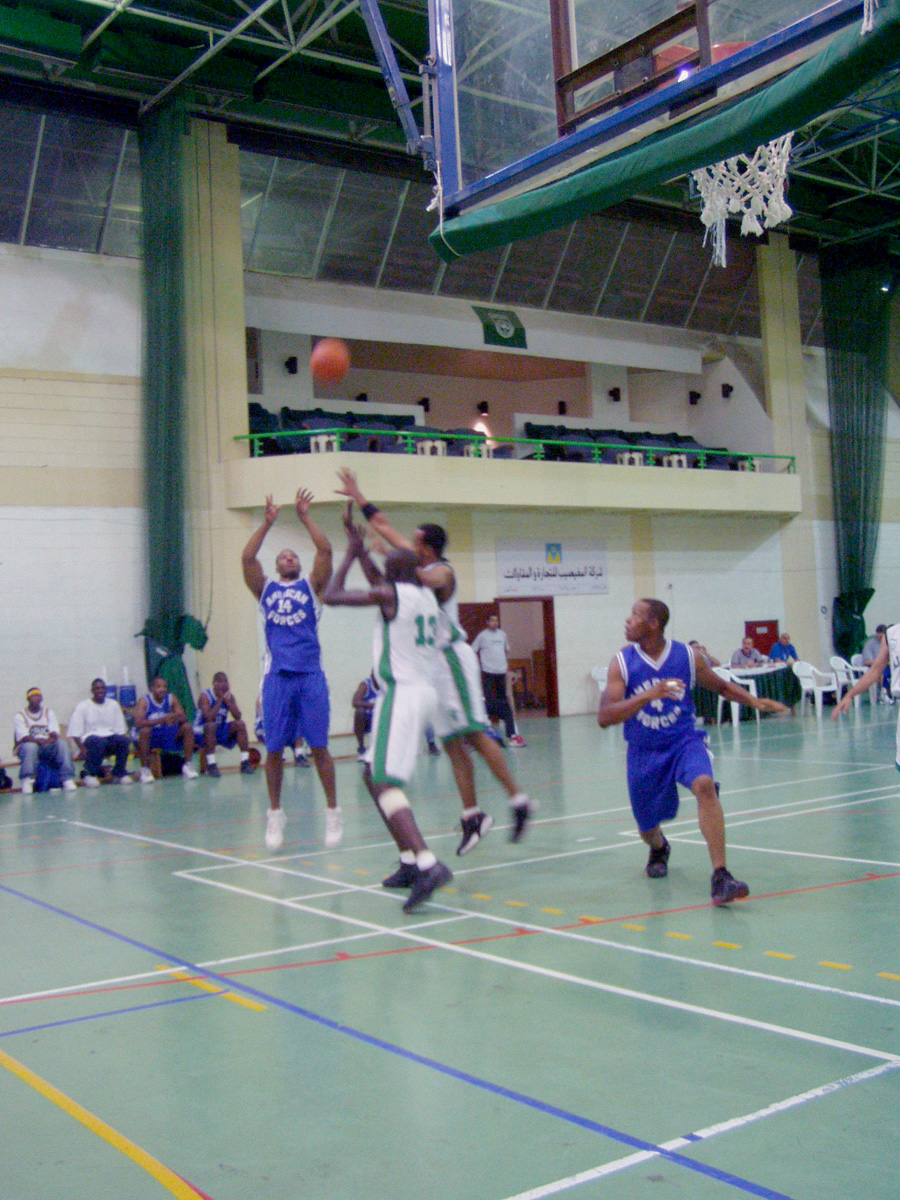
Shootin' hoops

DOHA, Qatar -- Ishman Woodard (14) shoots while American teammate Will Spencer (4) gets in position for a rebound. The team lost Oct. 22 to Al Ahli, 66-63, in a scrimmage game here. Its members will become the first Americans to play in the nation's capitol city league Nov. 9. Woodard is a senior airman assigned with the Combined Air Operations Center at Al Udeid Air Base. He is deployed from Barksdale Air Force Base, La. Spencer is an airman first class assigned to the 1st Expeditionary Red Horse Group and is deployed from Nellis AFB, Nev.